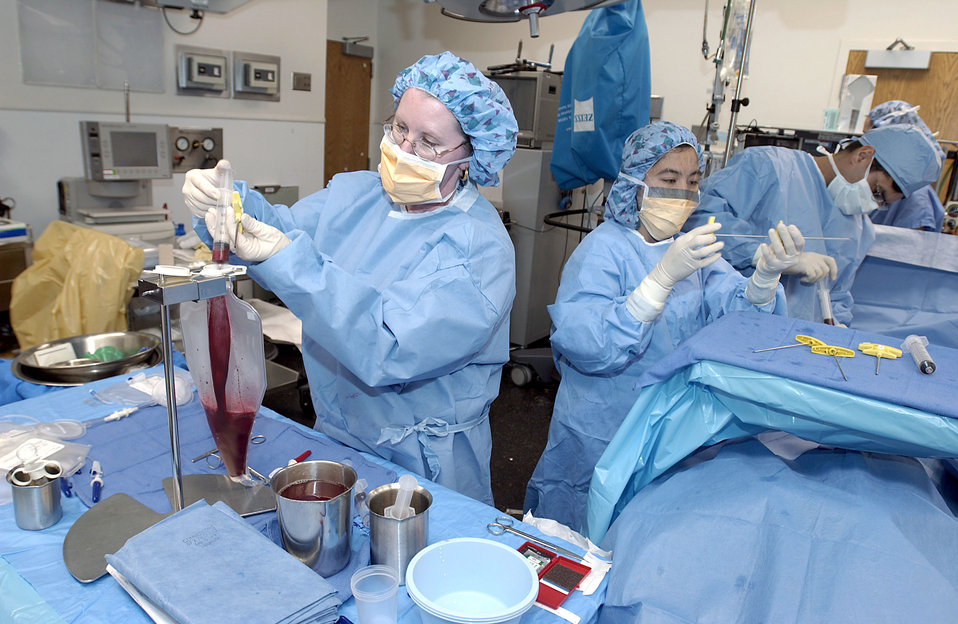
Captain's marrow saves life

WASHINGTON -- While one medical worker filters Capt. Brent Davis's marrow into a special collection bag, others prepare needles and continues to withdraw marrow to make the procedure as quick as possible. The marrow Captain Davis donated will aid a 17-year-old boy in his recovery from non-Hodgkin's lymphoma, a type of cancer. Captain Davis is the 910th Airlift Wing public affairs chief at Youngstown Air Reserve Station, Ohio.